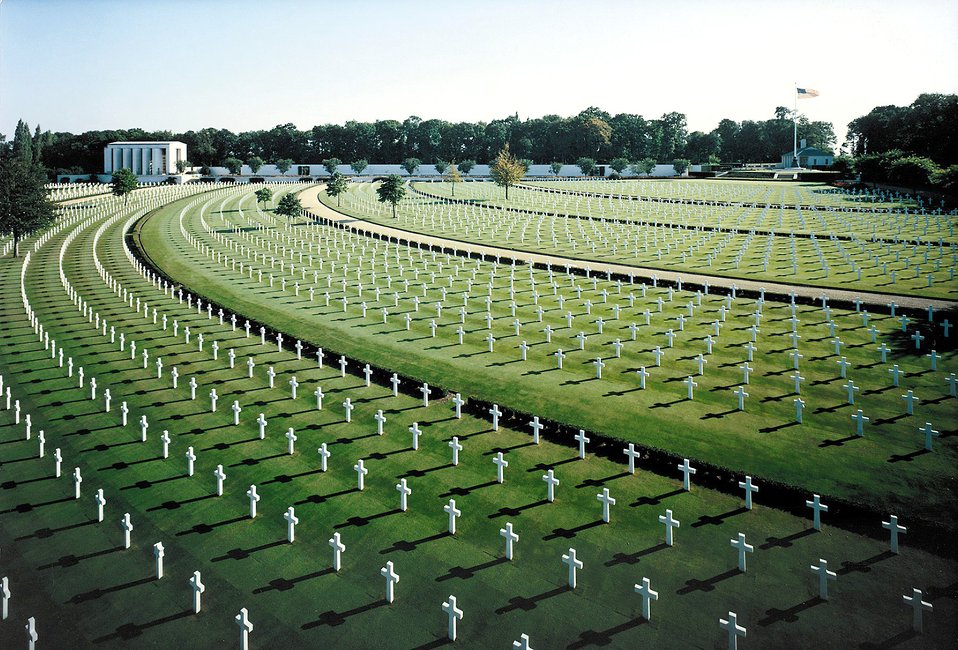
Commission maintains U.S. military cemeteries overseas

The U.S. cemetery in Cambridge, England, contains the remains of 3,812 American war dead from World War II. It is one of 24 American cemeteries overseas administered by the American Battle Monuments Commission